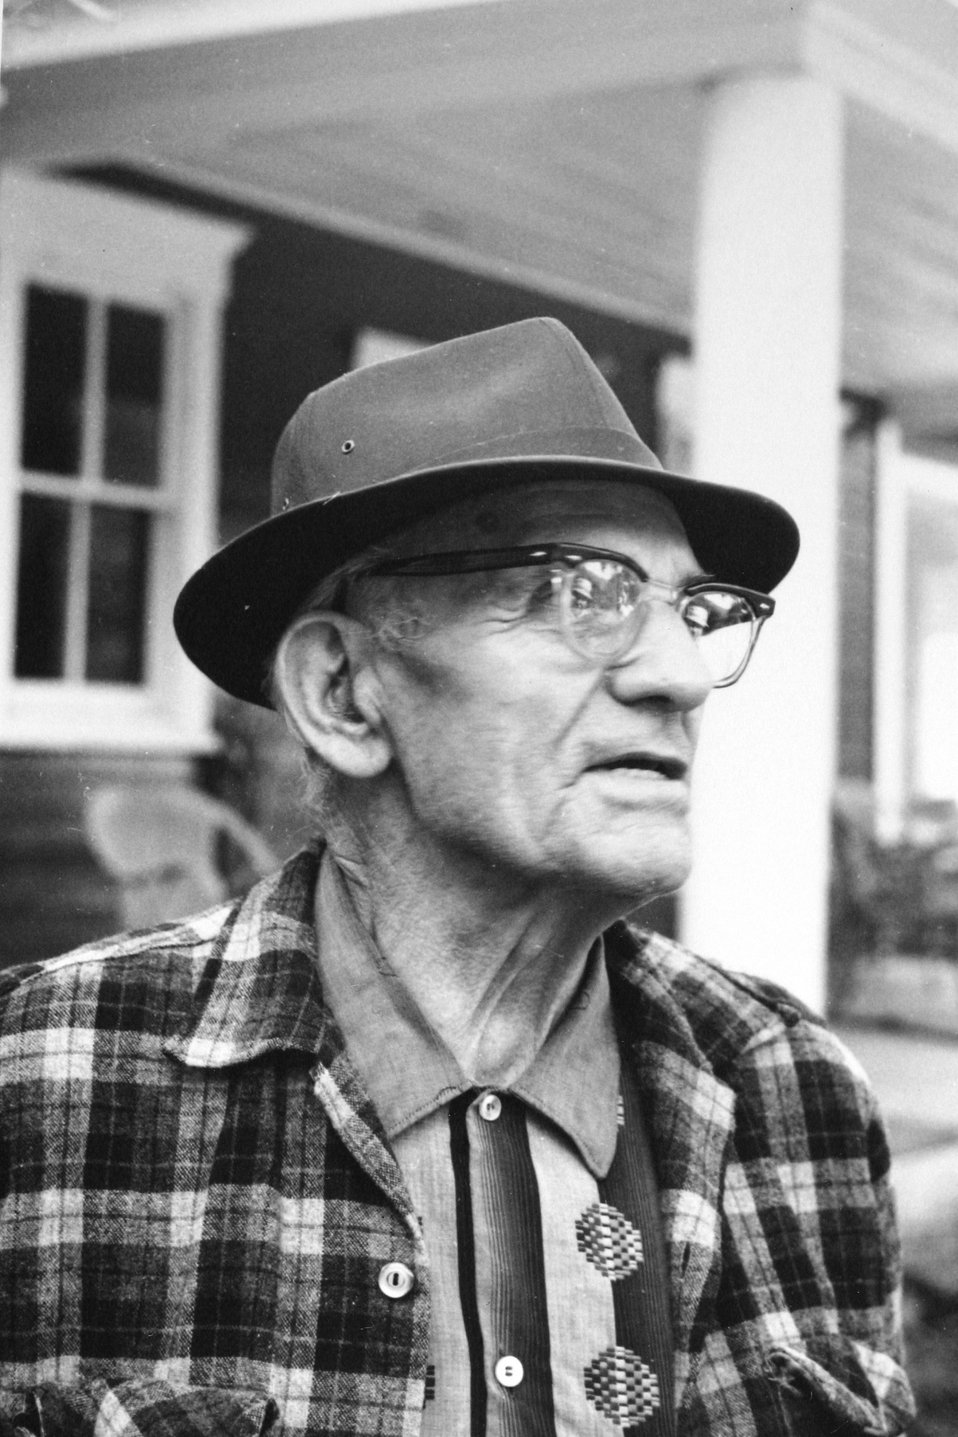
Ivin Billings C. 1977